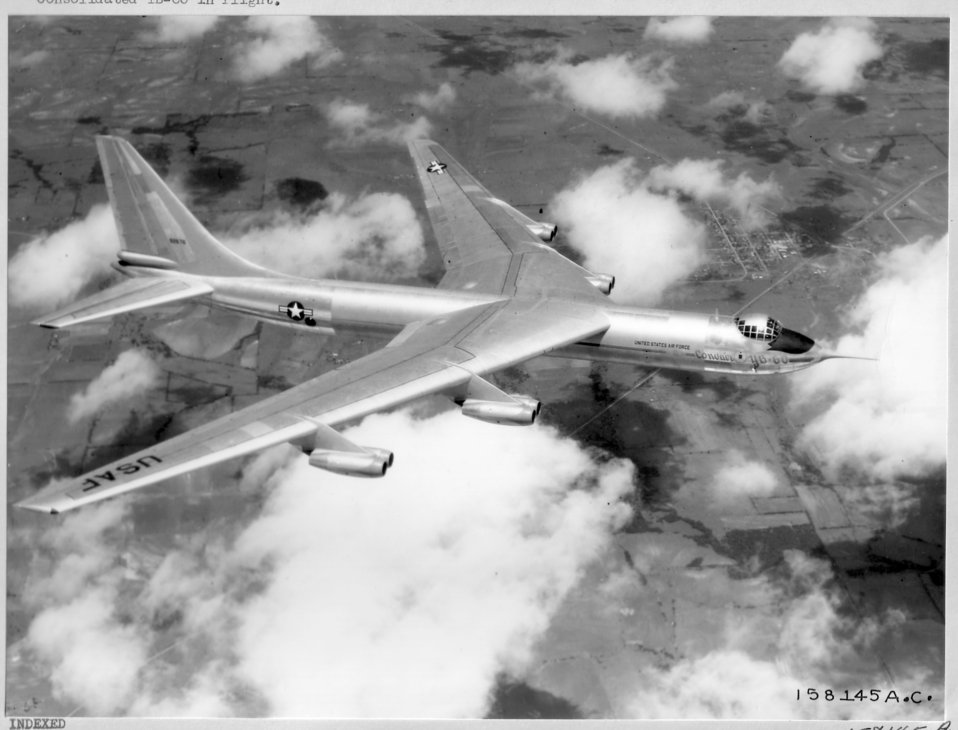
Convair YB-60 bomber

1950's - Convair YB-60 sweptwing, eight-jet bomber is shown here in the first flight view of the U.S. Air Force's latest addition to its air arsenal. Equipped with eight Pratt & Whitney turbojet engines, most powerful of their type now in use, the YB-60 was rolled out of the factory at Consolidated Vultee Aircraft Corporation's Fort Worth, Texas, Division on April 6, 1952, for engine run-ups and ground tests. First flight, on April 18, 1952, occurred just 14 days after installation of its final engine. Planes needle-nose appearance originates from a slender boom used for test purposes.